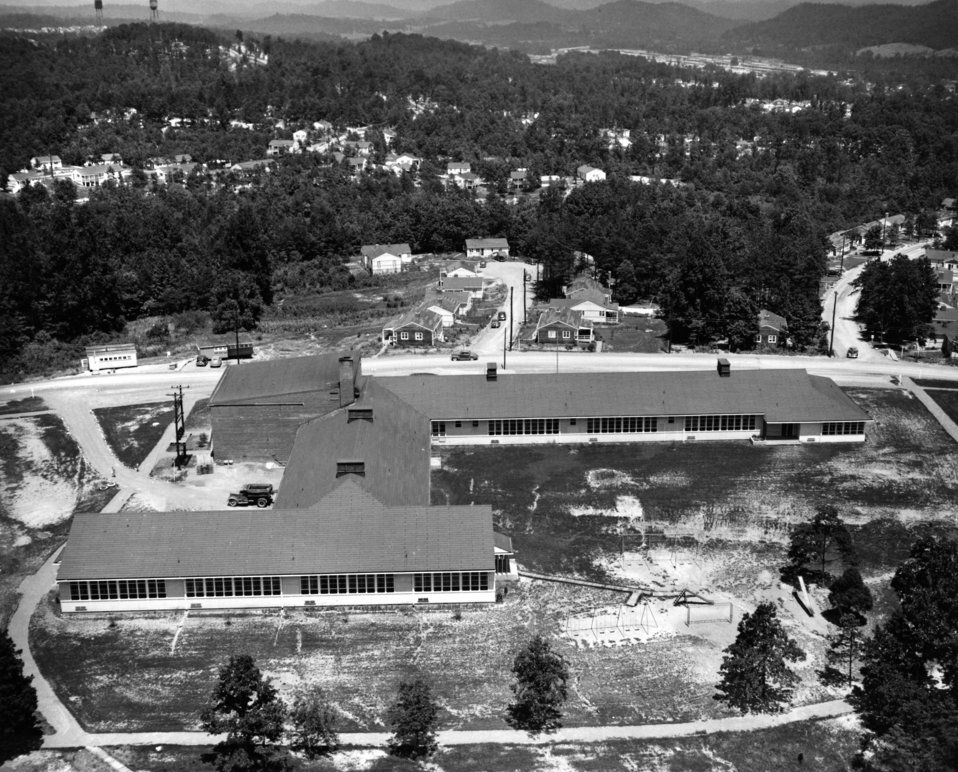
Cedar Hill Elementary School Oak Ridge 1945

1594 DOE photo Ed Westcott 3-30-1946 Oak Ridge Tennessee